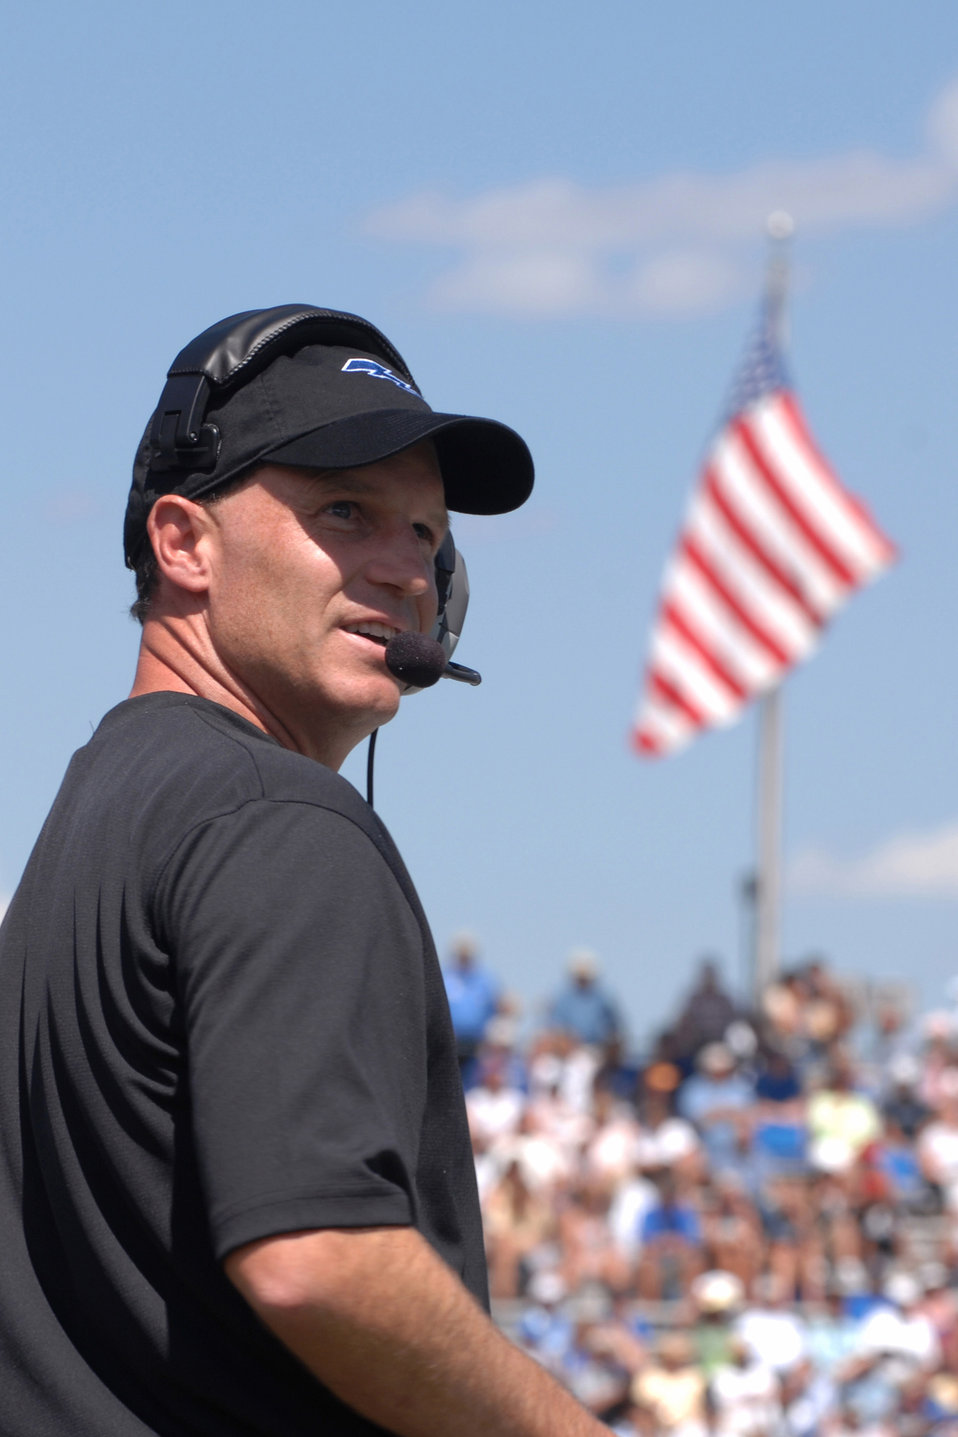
Calhoun to remain at Air Force

Air Force Academy football coach Troy Calhoun will remain at the Academy for the 2010 football season.